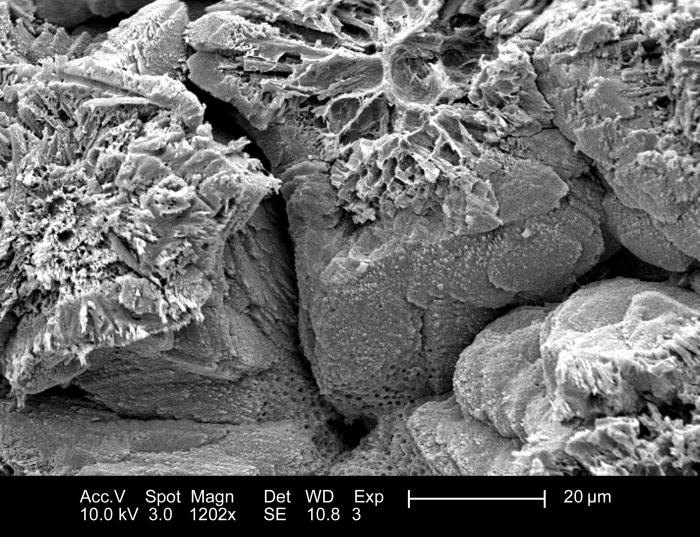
This 2005 scanning electron micrograph (SEM) depicted the morphologic characteristics of the inner surface of an unidentified bird's eggshell. In this view the details revealed included the surfaces of the mammillary cones, and a number of intermammillary pores, i.e., canals that span the distance between the shell's outer cuticle layer, and the interior membranous layers. It is through these pores that the diffusion of gasses takes place. This shell fragment was retrieved from the grounds of the Decatur, Georgia suburbs; Magnified 1202x.